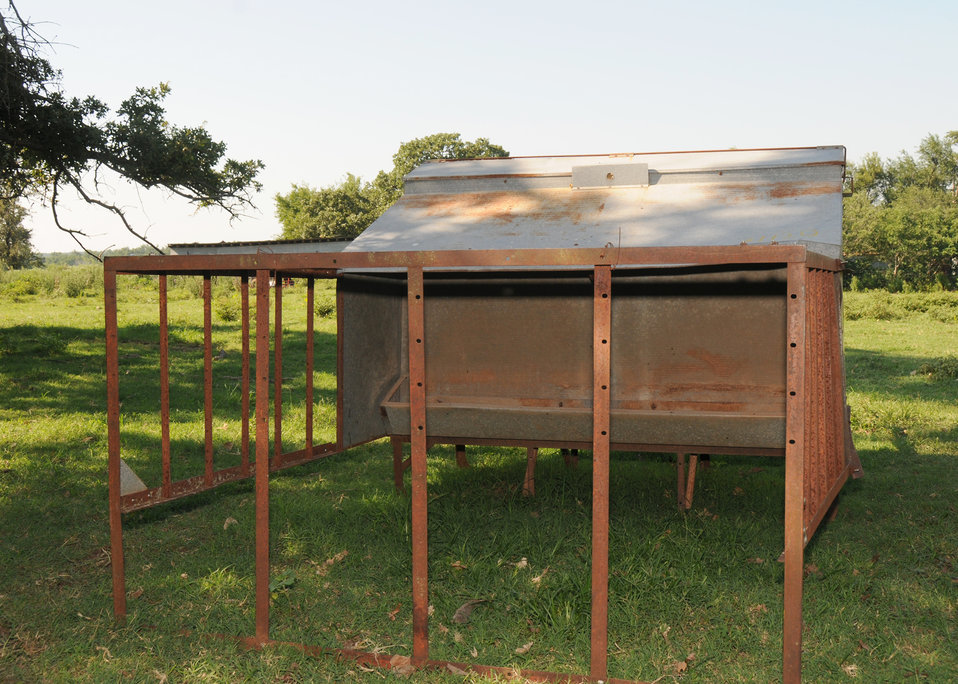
A creep feeder on the Burris farm in McLoud, Oklahoma. This feeder was purchased with a ARRA funded loan through FSA.